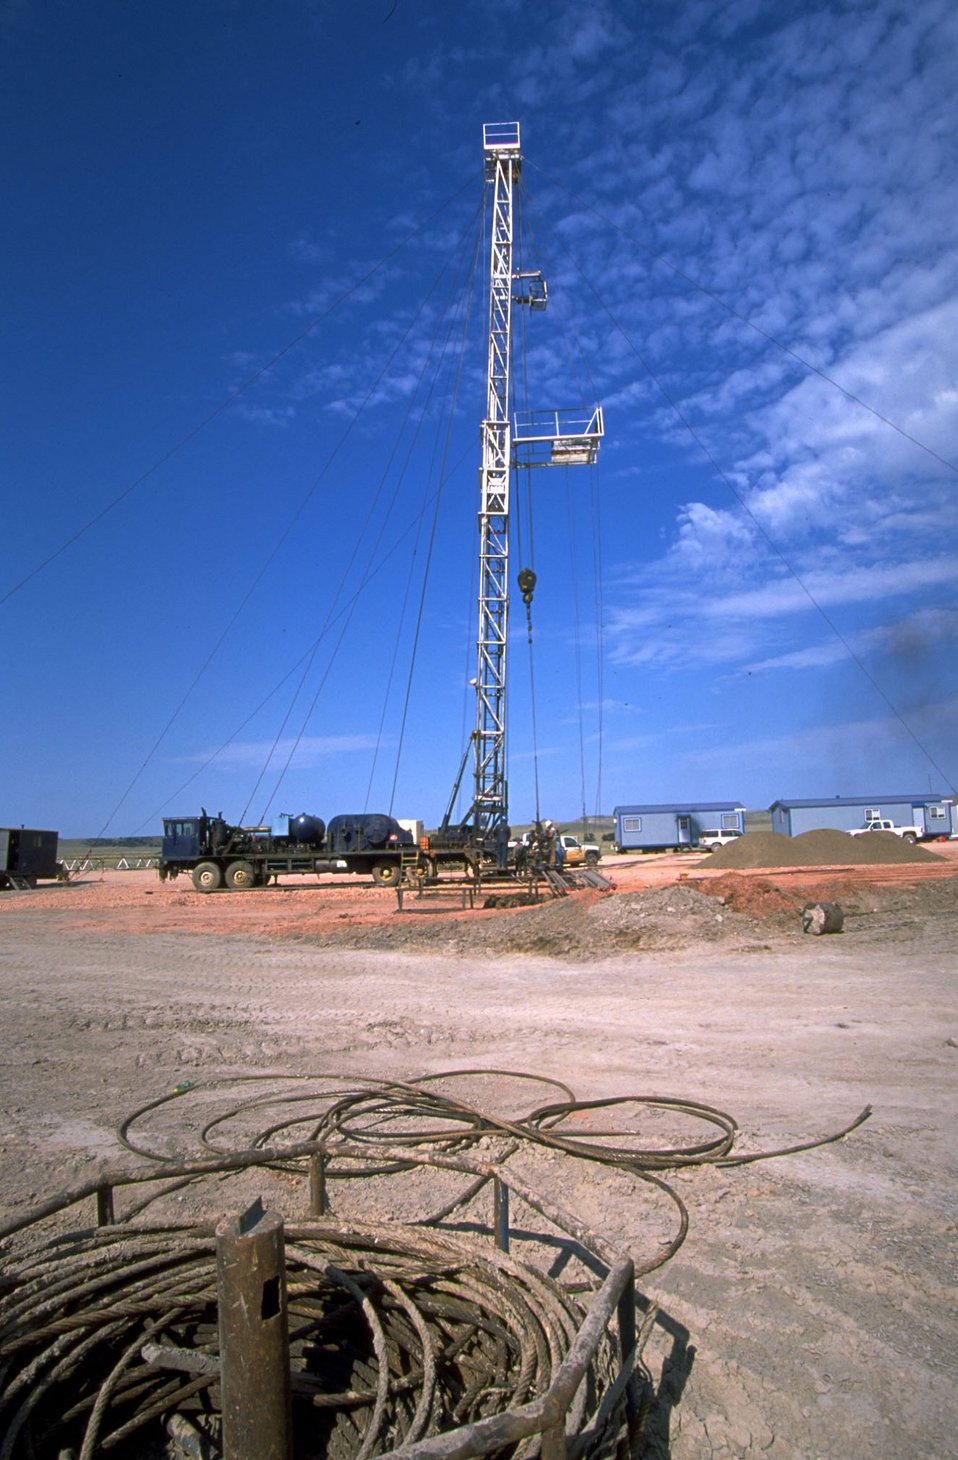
Work-over rig/well completion tripping in the hole with rods